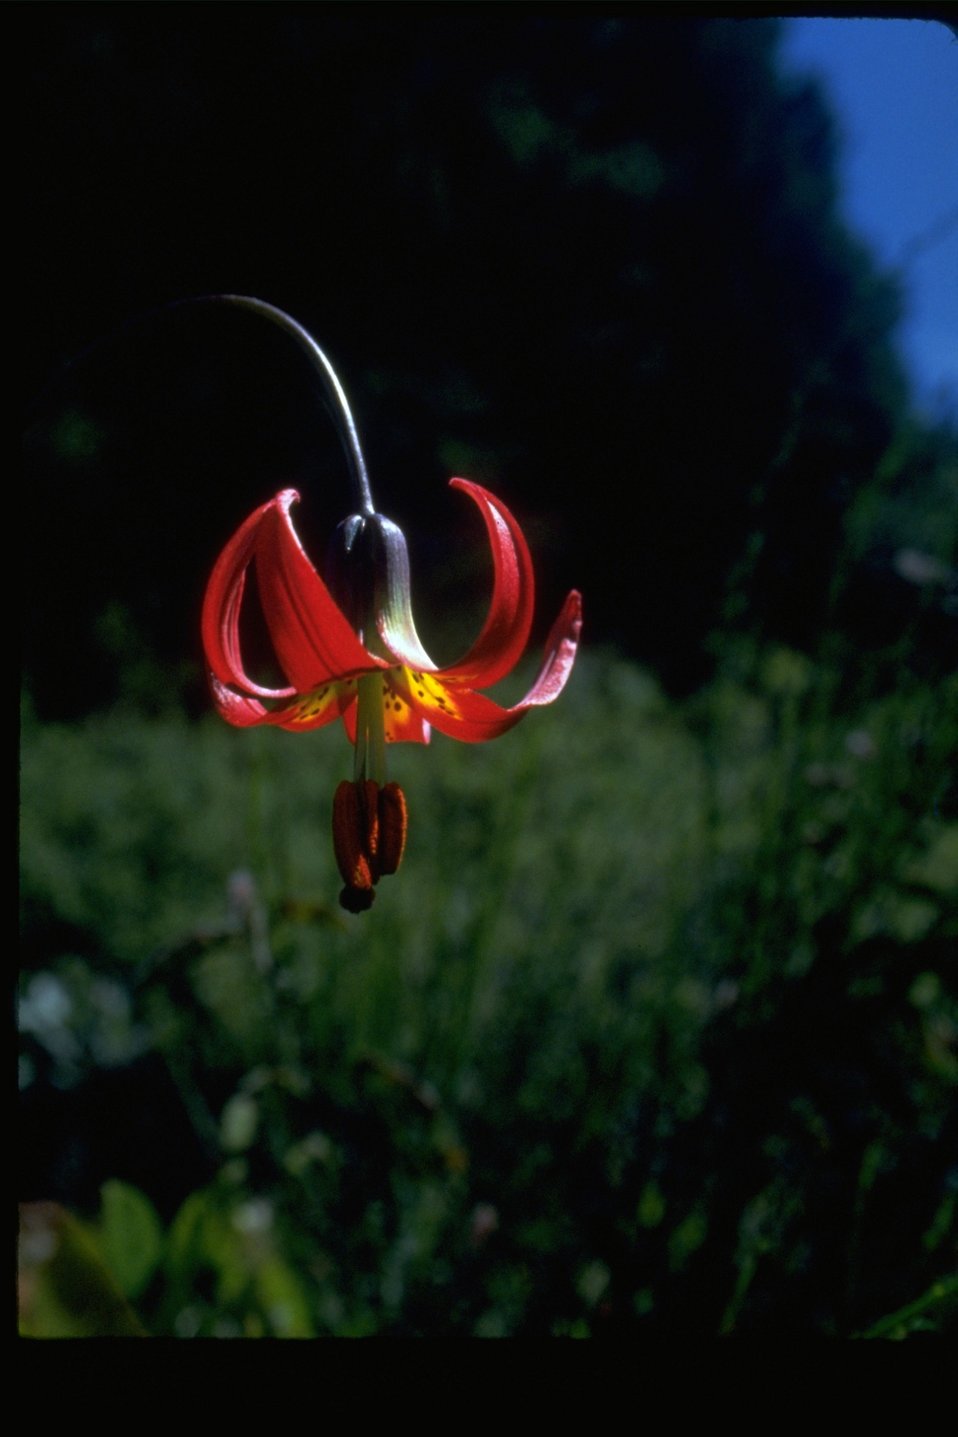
Western Lilly (Lilium occidentale).